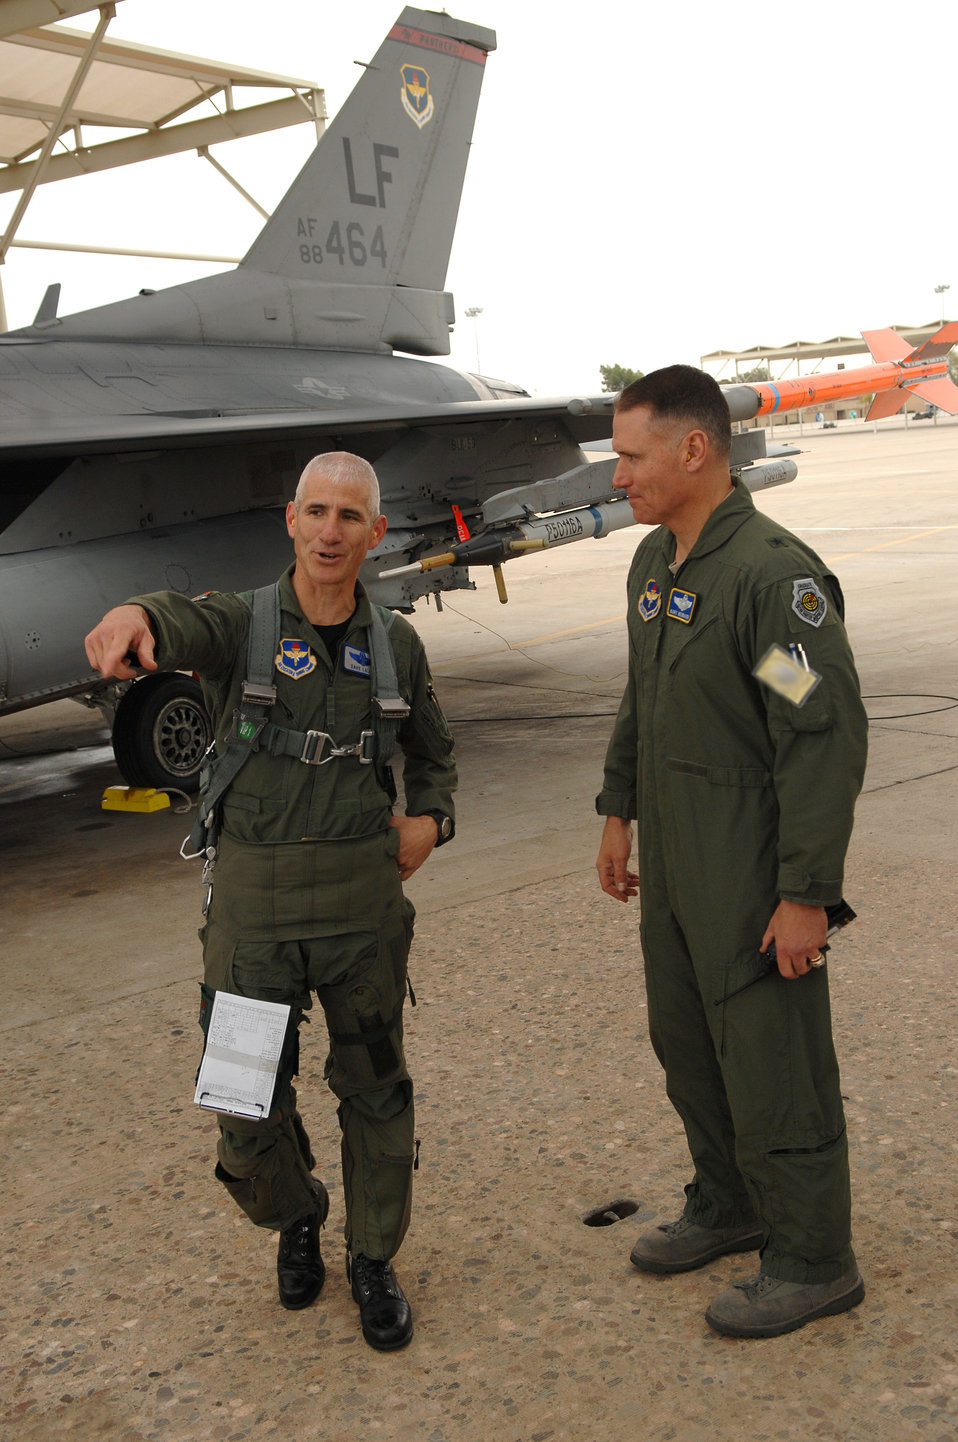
Luke pilot reaches F-16 milestone

Col. David Lujan (left), 56th Operations Group deputy commander, shares a laugh with Brig. Gen. Kurt Neubauer, 56th Fighter Wing commander at Luke Air Force Base, Ariz., Dec. 22, moments after he completed his 4,000th hour in the F-16 Fighting Falcon. He is the 17th pilot to reach this milestone.